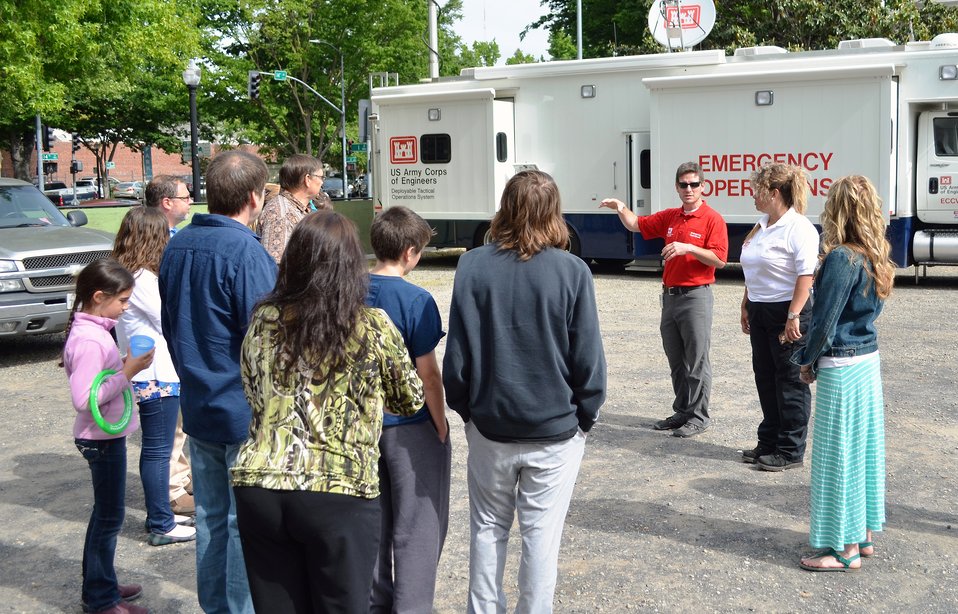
Bring Your Child to Work Day teaches kids about science, technology

Joshua Jimerfield, an emergency management specialist with the U.S. Army Corps of Engineers Sacramento District, describes the features of an emergency command center vehicle during the “Bring Your Child to Work Day” event at district headquarters April 24, 2014, in Sacramento, Calif. The district hosted the event to encourage kids to pursue careers in science, technology, engineering and mathematics, or STEM.